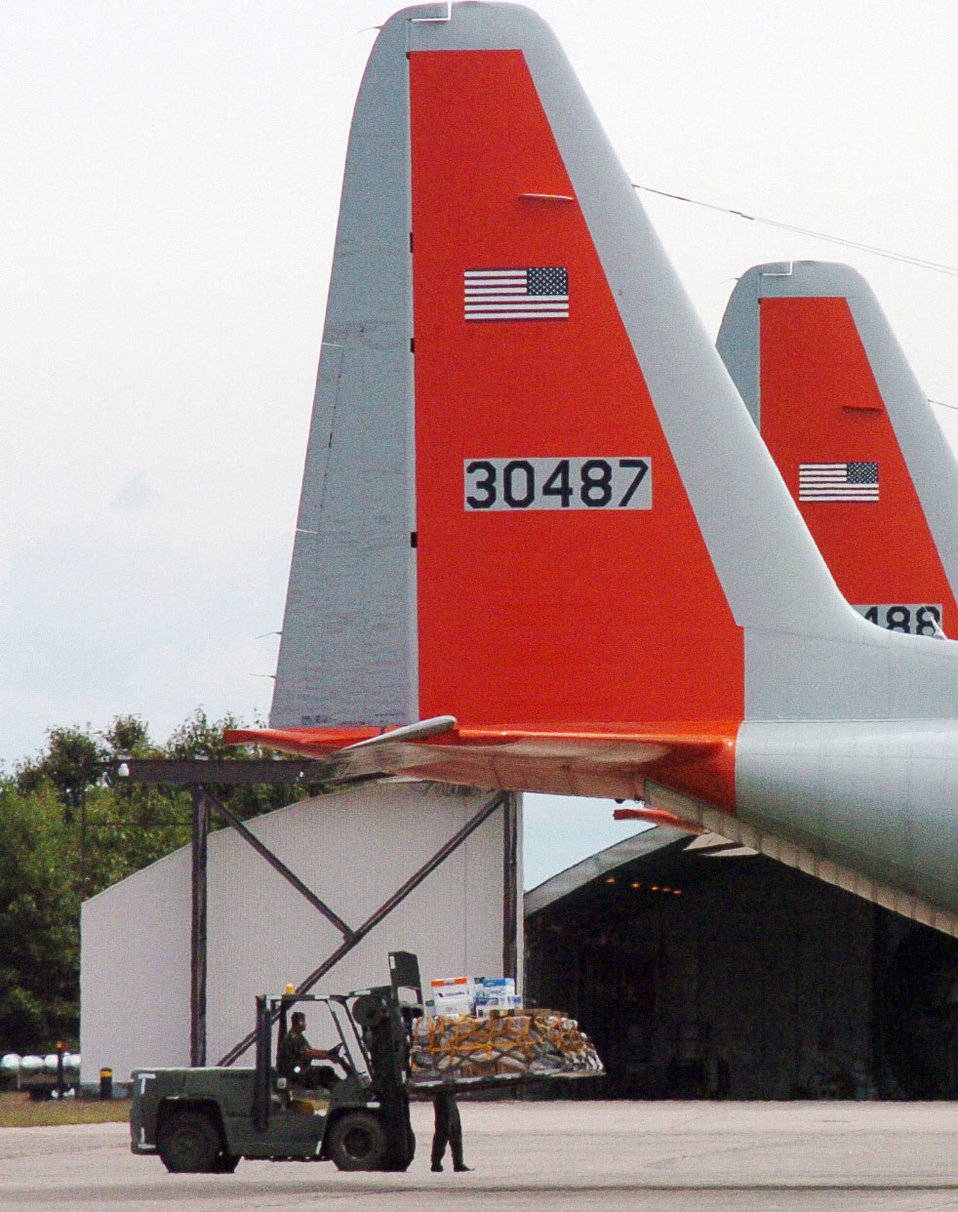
Quick Response Force

BRADLEY AIR NATIONAL GUARD BASE, Conn. - Airmen from a transportation management squadron load a C-130 Hercules with baggage needed by Soldiers and Airmen from the Connecticut National Guard's Quick Response Force (QRF) here Sept. 9. The QRF was formed after Sept. 11, 2001 to rapidly respond to any state emergency. They are on their way to New Orleans to provide security for Hurricane Katrina relief operations.